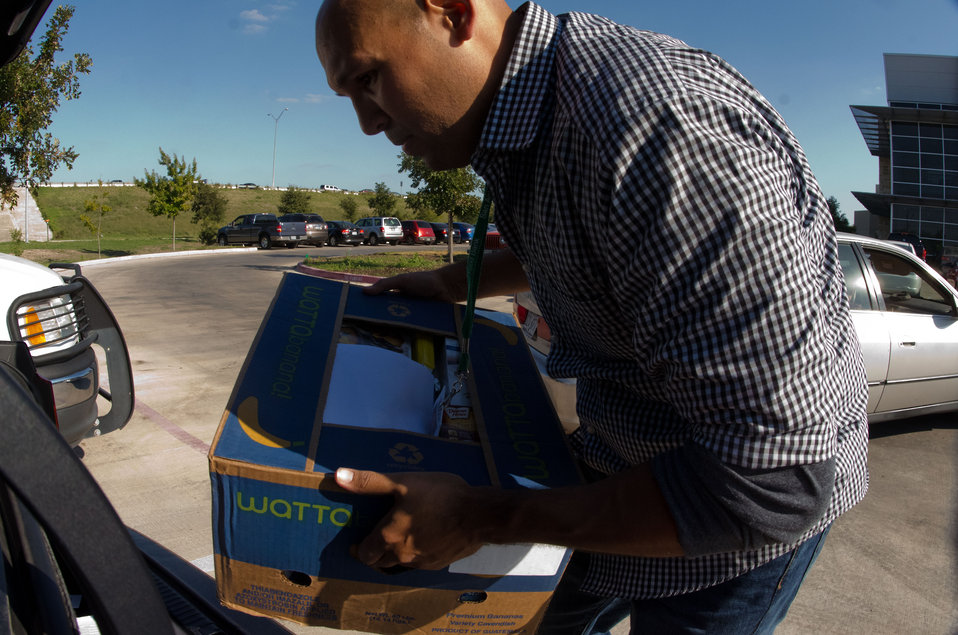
San Antonio Food Bank (SAFB) Outreach Specialist Seth Villalobos made a personal delivery of provisions on Monday, October 31, 2011, to a family in San Antonio, TX whose apartment unit was consumed by a fire. Left with the clothes they are wearing they were referred to the San Antonio Food Bank where Villalobos listened and determined what their immediate needs were. He talked about government programs that could address their needs, and benefits that could help them rebuild their lives. During that initial visit, the mother and daughter applied for Children’s Medicaid and Women, Infants & Children (WIC) benefits, later they were briefed about the United States Department of Agriculture’s Supplemental Nutrition Assistance Program (SNAP) and the Federally funded, state administered Temporary Assistance for Needy Families Benefits (TANF). Villalobos made the trip to this family’s temporary home hoping to make the displaced family’s first evening a little easier. In the box were provisions from the USDA and other contributors to SAFB.
The San Antonio Food Bank is a non-profit organization that serves as a clearinghouse receiving and storing truckloads of donated food, produce, and other grocery. SAFB distribute these items to over 500 service agencies that help people in need.
“We couldn’t do what we do without our partnership with USDA’” said President and CEO Eric Cooper. SAFB serves 16 counties in Southwest Texas and states, “Nearly one out of every four children and one out of every five adults in Southwest Texas lives in poverty and has difficulty meeting basic nutritional needs.” According to SAFB, sixty-five percent of the people requesting emergency food have children. USDA photo by Lance Cheung.
www.fns.usda.gov/fns/
www.fns.usda.gov/snap/ www.fns.usda.gov/fdd/programs/tefap/